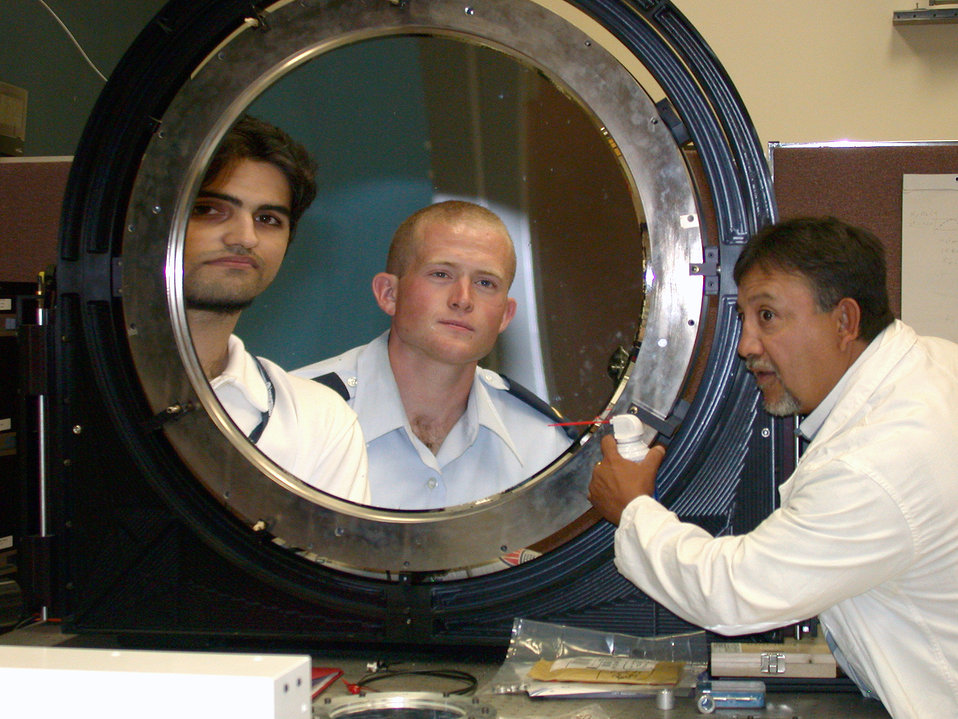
Men in the mirror

KIRTLAND AIR FORCE BASE, N.M. -- Dr. Richard Carreras aligns, pressurizes and cleans a prototype thin-film membrane mirror. Reflected in the mirror are co-workers 2nd Lt. Ethan Holt, the film mirror project officer, and Nima Jamshidi, a Purdue University student employee.